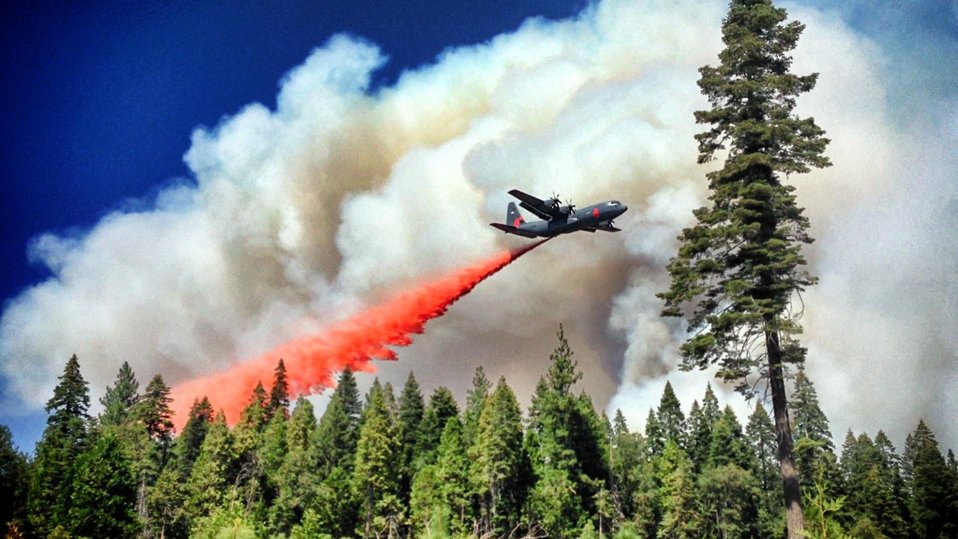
An aircraft makes fire retardant drop on the American Fire. The American Fire in Tahoe National Forest near Foresthill, CA began on Aug. 10, 2013 is under investigation. The fire has consumed approximately 24,935 acres and is approximately 88% contained.